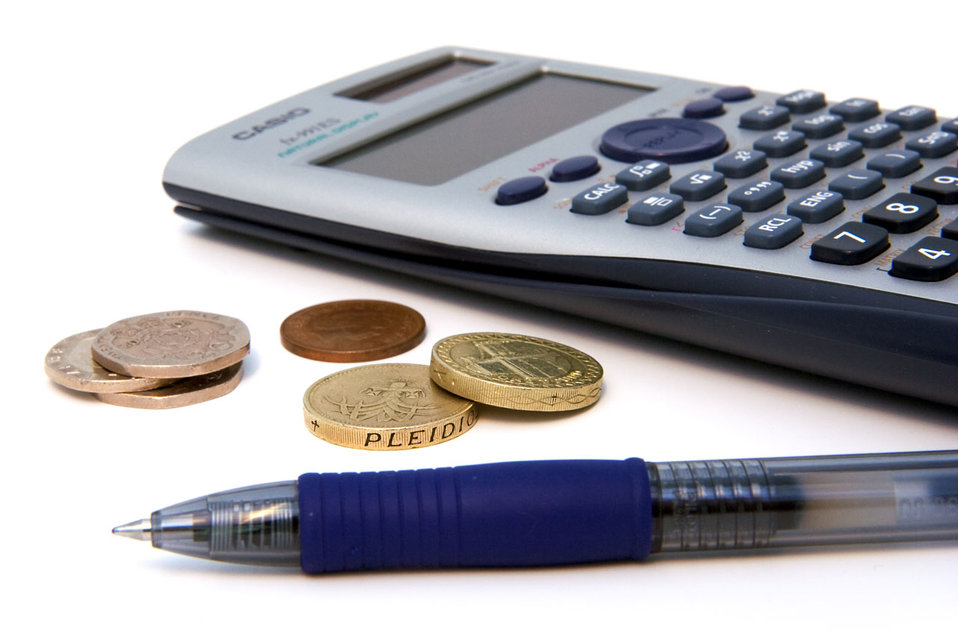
Business

Essentials for a businessman.